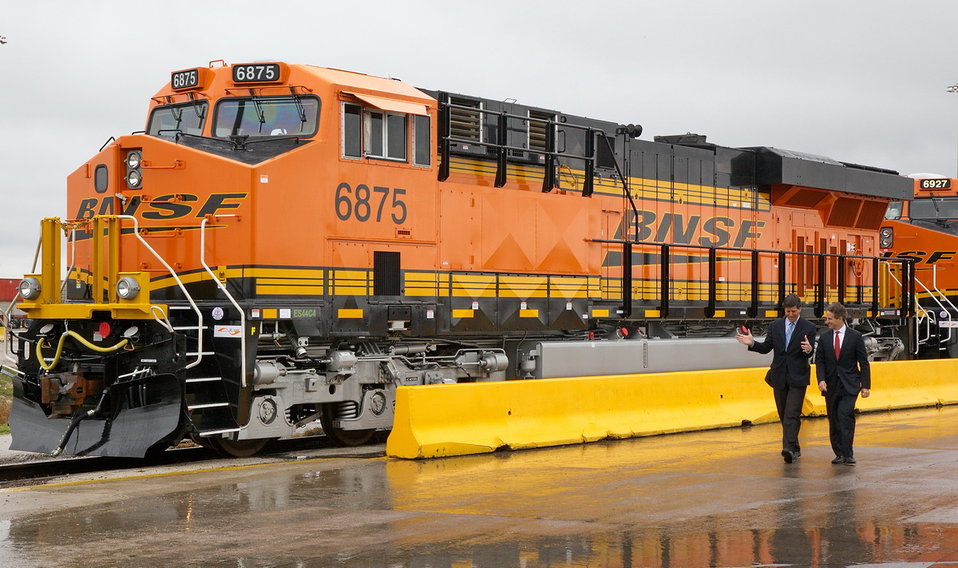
Secretary Geithner Visits BNSF Railway Dallas-Fort Worth, TX

PBS Nightly Business Report's Darren Gersh and Treasury Secretary Tim Geithner walk through the BNSF Alliance Intermodal Facility before sitting for an interview.